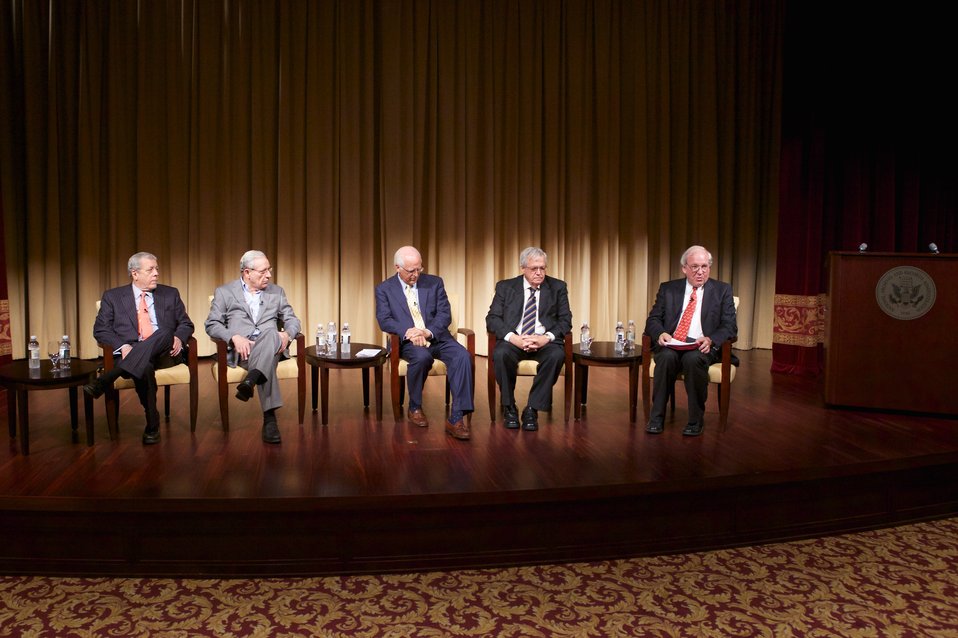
The Role of Congress in International Crises